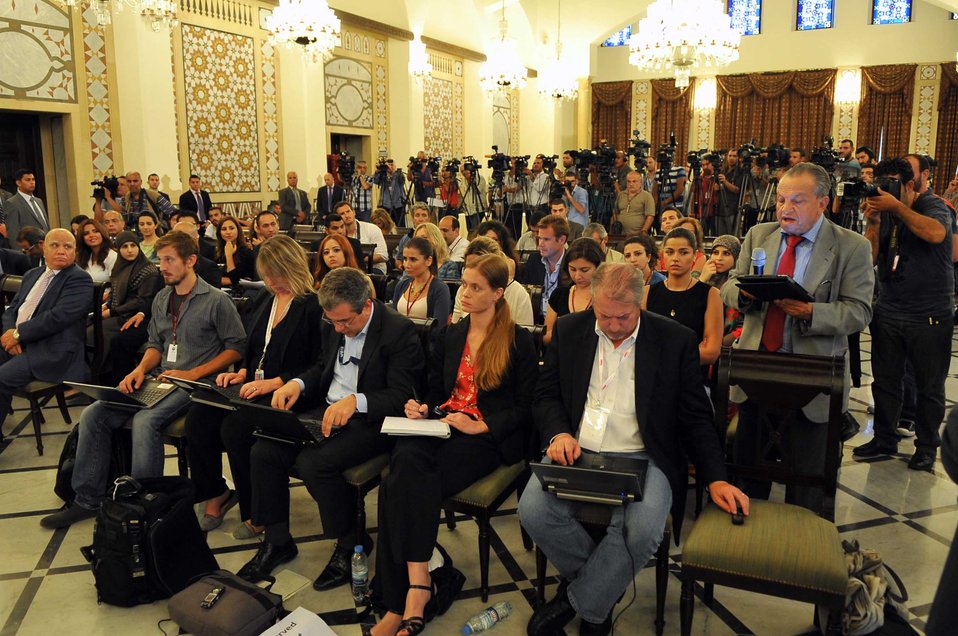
Lebanese Reporter Flayhan Asks Secretary Kerry Question During News Conference

Lebanese reporter Khalil Flayhan of the An-Nahar newspaper asks U.S. Secretary of State John Kerry a question during a news conference that followed his meeting with Prime Minister Tammam Salam in Beirut on June 4, 2014.